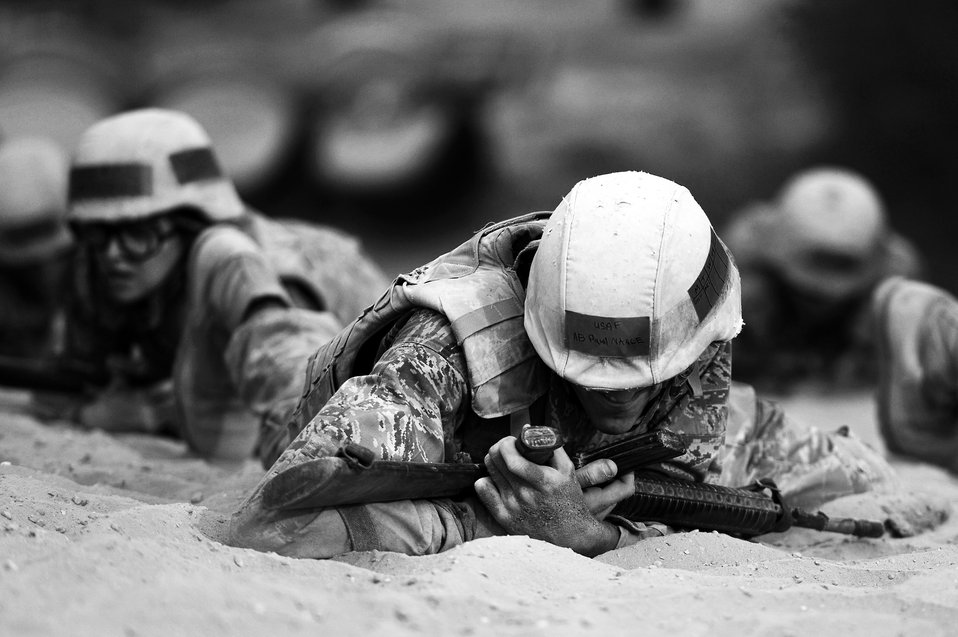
BEAST

Basic trainees go through their sixth week of Air Force basic military training at the Basic Expeditionary Airman Skills Training on May 25, 2011, at Lackland Air Force Base, Texas.